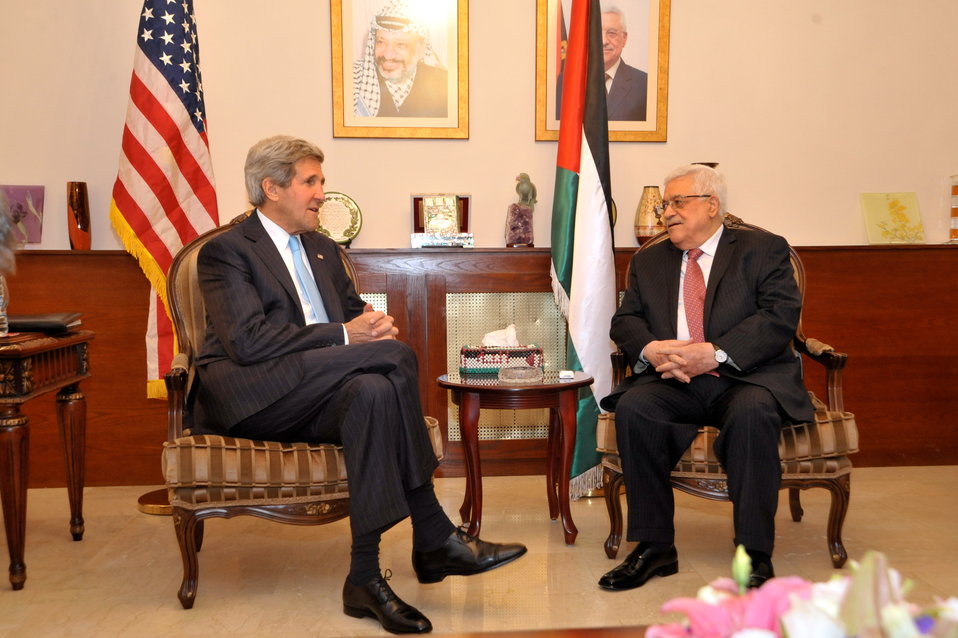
Secretary Kerry Meets With Palestinian Authority President Abbas

U.S. Secretary of State John Kerry sits with Palestinian Authority President Mahmoud Abbas before a meeting in Amman, Jordan, on June 28, 2013.